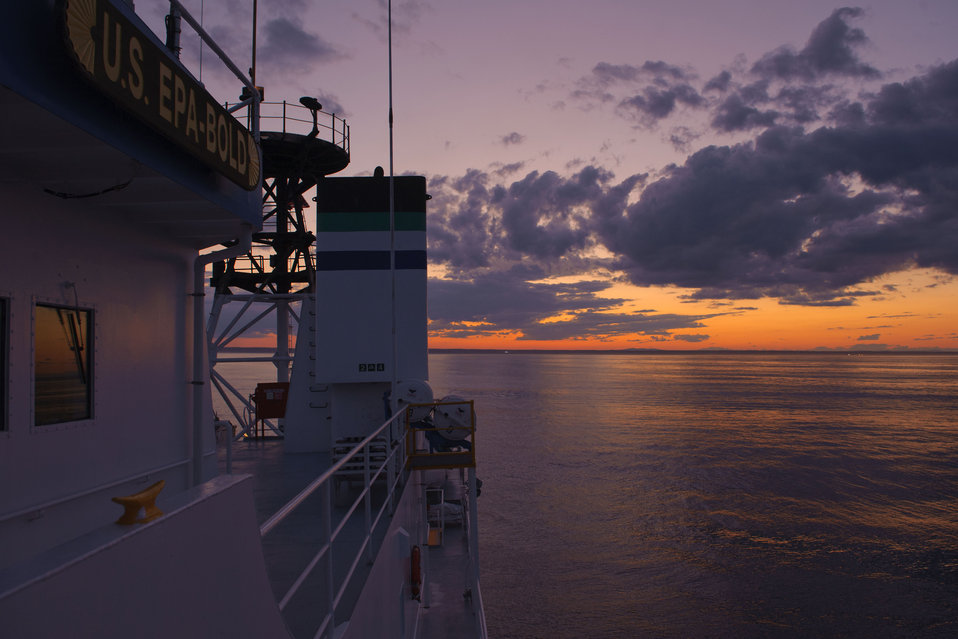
August 9, 2011 Sunset over the port side of the Bold